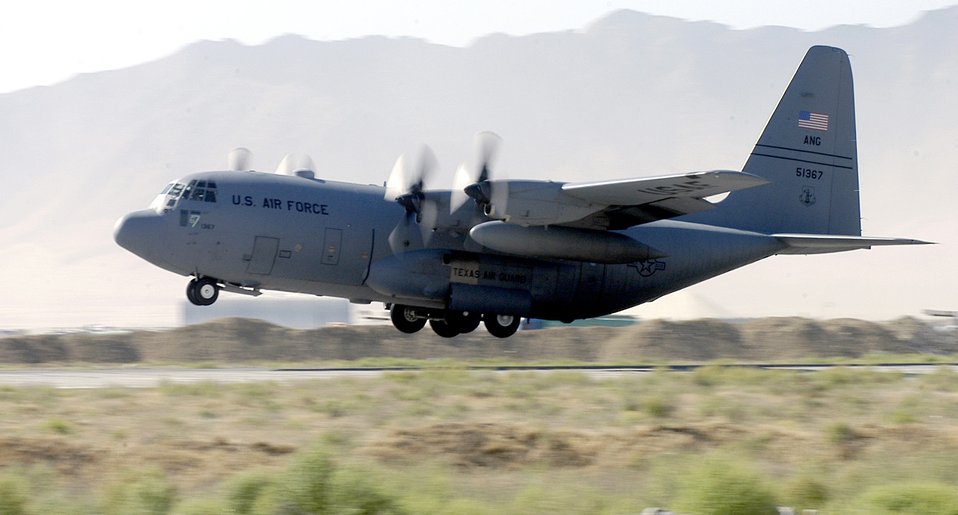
Airpower summary for Aug. 16, 2007

Transports, like this Texas Air National Guard C-130 Hercules taking off from Bagram Air Base, Afghanistan, provide intratheater airlift to help sustain operations throughout Afghanistan, Iraq and the Horn of Africa.